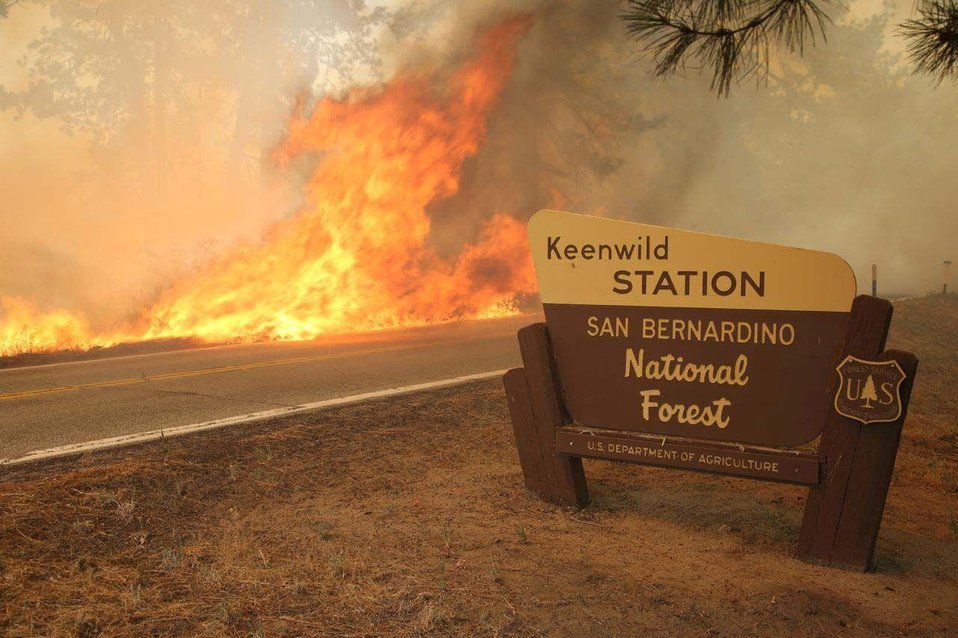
Mountain Fire in the San Bernardino National Forest in California began on Jul. 15, 2013 and its cause is under investigation. The fire has consumed approximately 27, 332 acres. The fire is approximately 85 % contained.